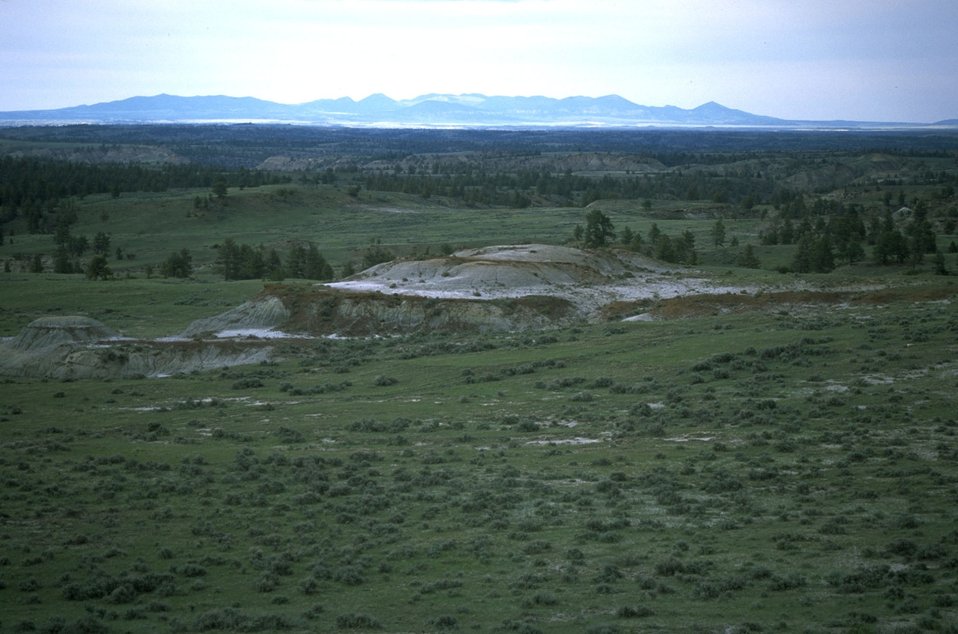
Sagebrush range with Little Rocky Mountains in the background